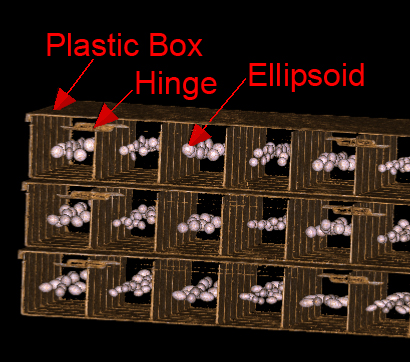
CT scans

Scan of pill-sized ellipsoids, which mimic the density of tumors